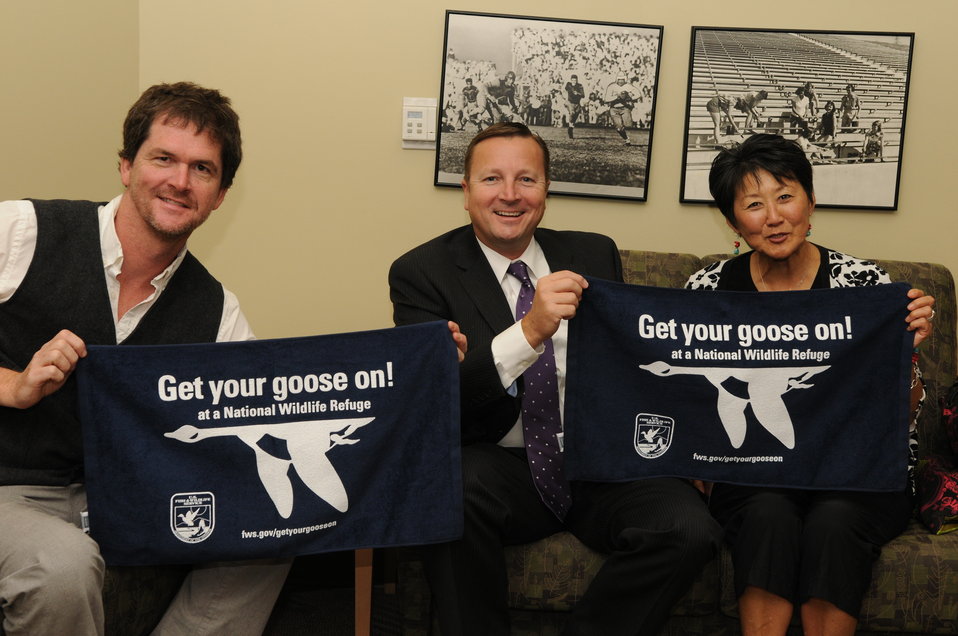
Get your goose on!

The U.S. Fish & Wildlife Service sponsored the 2012 Federal Duck Stamp Art Contest September 28 and 29 in Ogden, Utah, at Weber State University. A panel of five judges was responsible for choosing the art work used to design the 2013-2014 Migratory Bird Hunting and Conservation Stamp.